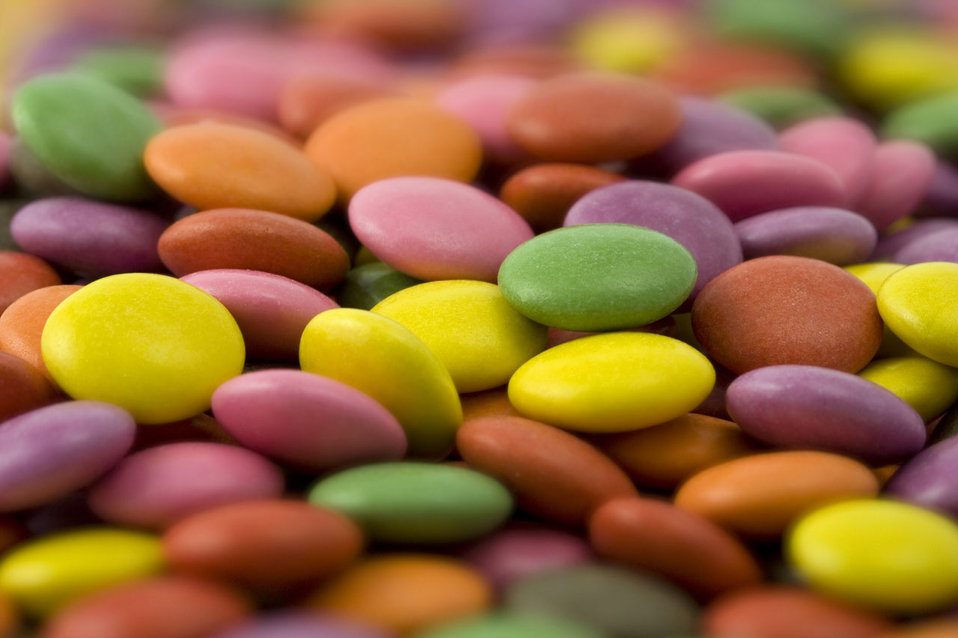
Smarties

Detailed photo of colorful chocolate bonbons.